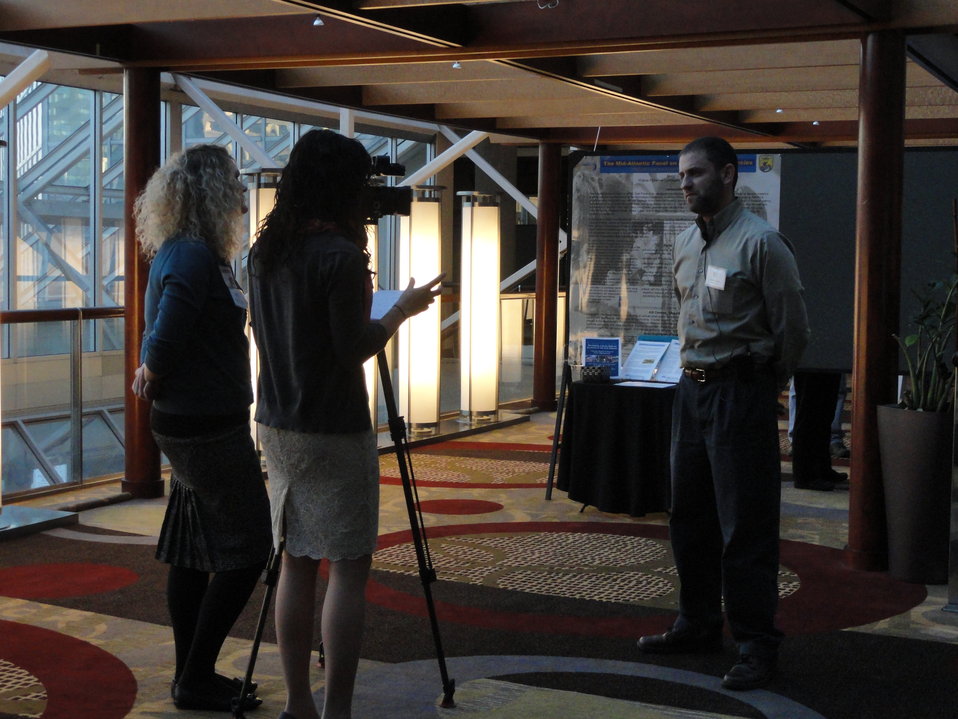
Interviews

The External Affairs team interviewing a biologists at theNortheast Region Biologists Conference.